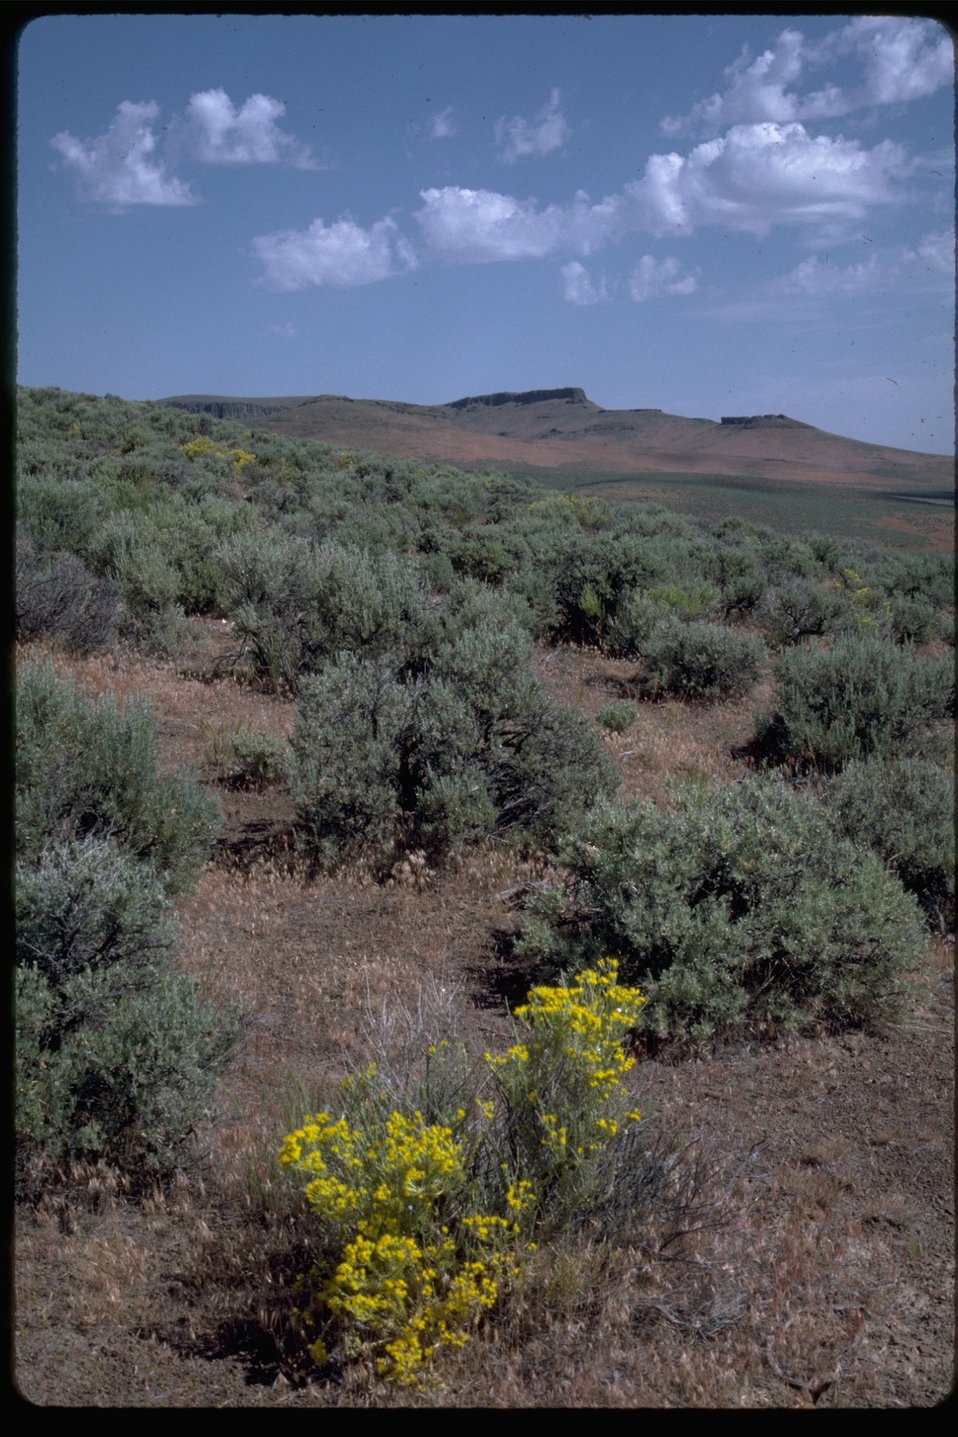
Wildflowers and sage brush on the flatlands of the Bowden Hills Wilderness Study Area. OR 3-118.